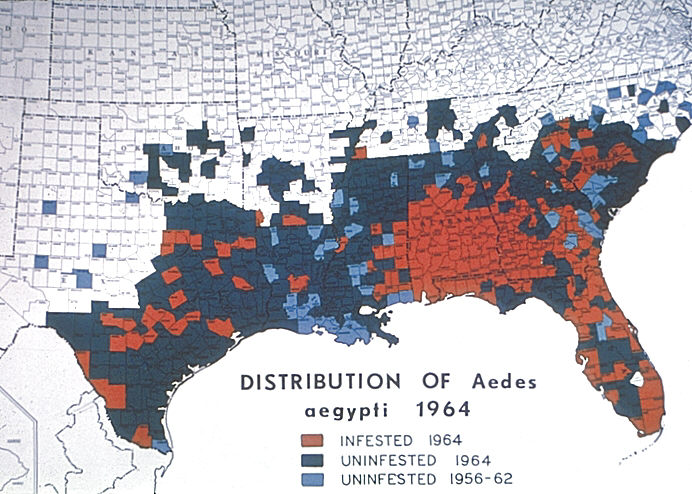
Map showing distribution of Aedes aegypti mosquito in the United States in 1964.